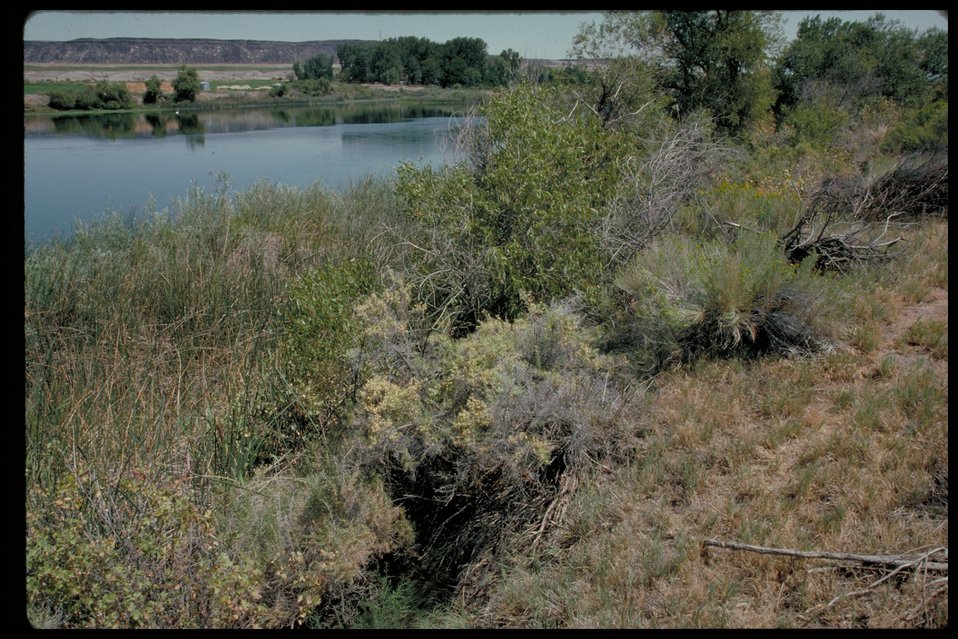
Birds of Prey National Conservation Area BOP Owyhee Field Office LSRD Lower Snake River District